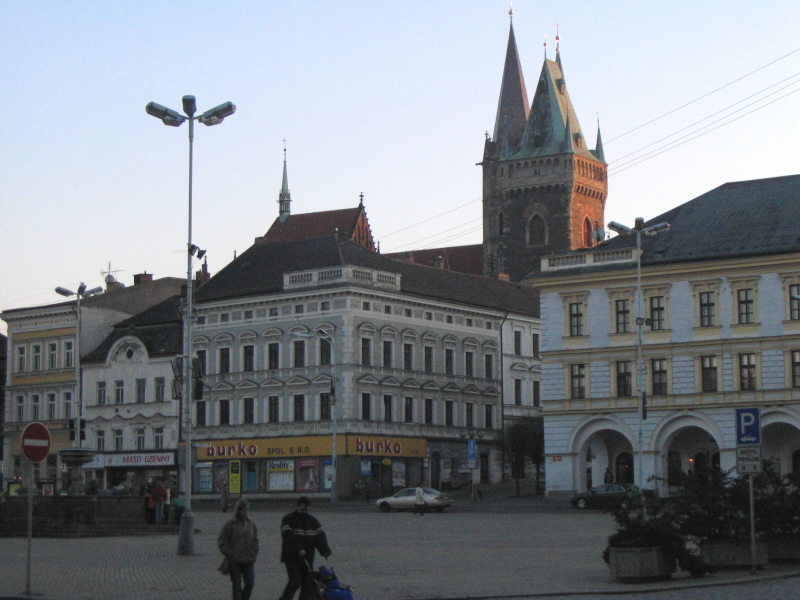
Čeština: Jižní strana hlavního náměstí v Kolíně